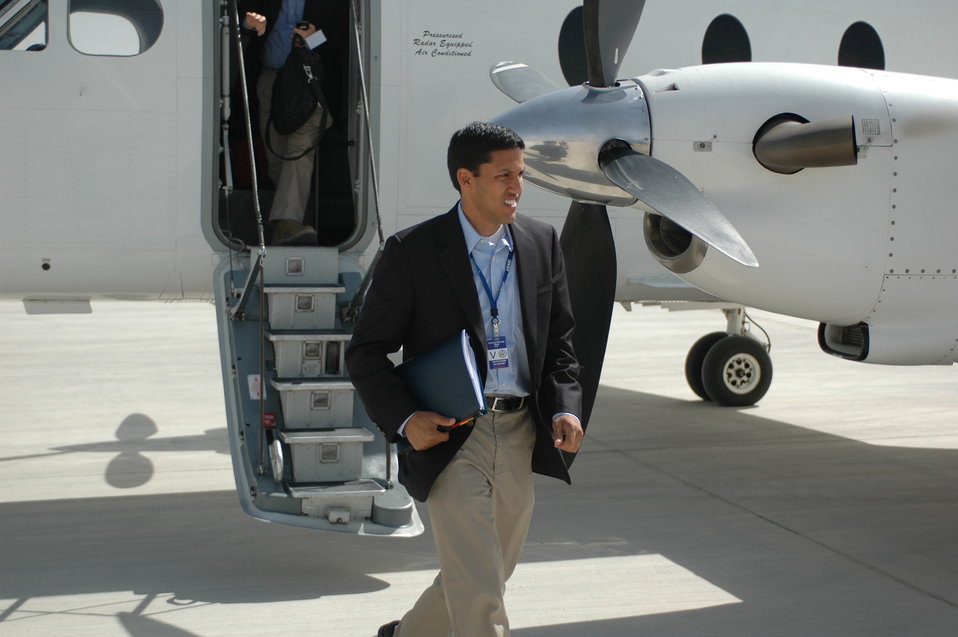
Dr Shah Visits Kandahar April 9, 2010